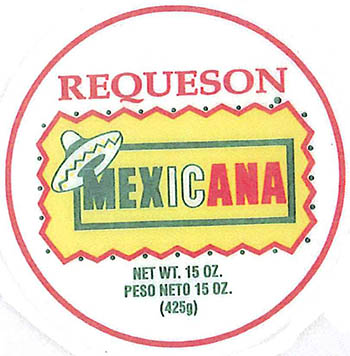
RECALLED – Variety of cheeses

February 25, 2014 – Product Recall – EXPANDED - Roos Foods Voluntarily Recalls Variety of Cheeses (listed below) Due to Possible Health Risk.